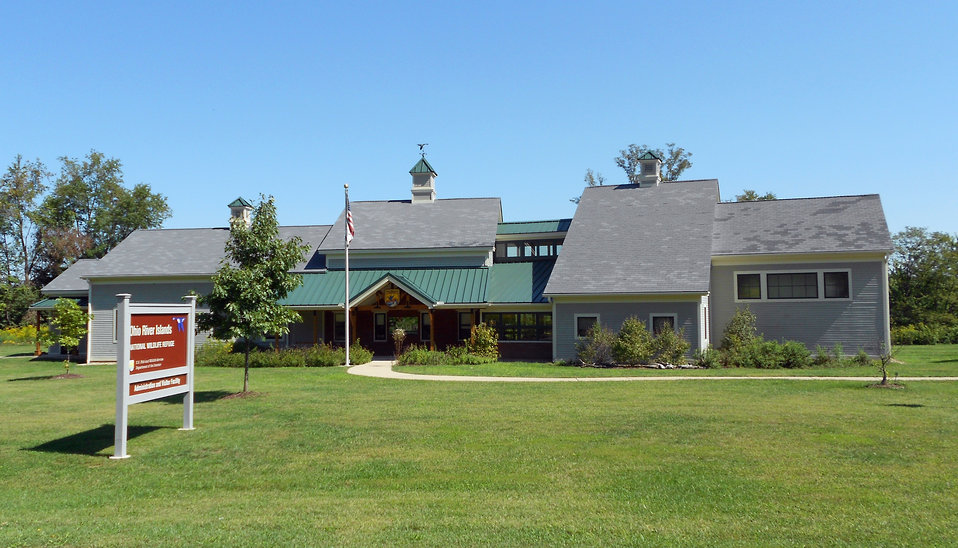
Visitor Center

Ohio River Islands National Wildlife Refuge, WV.